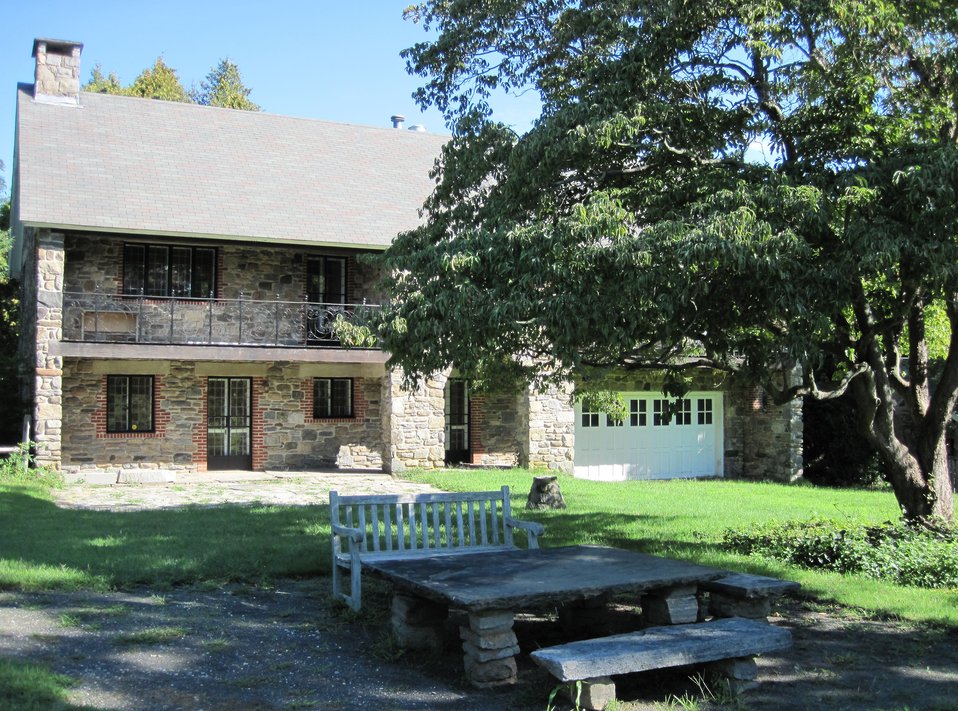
Read-Lape House

It serves today as refuge headquarters at Stewart B. McKinney National Wildlife Refuge in Connecticut. (USFWS)